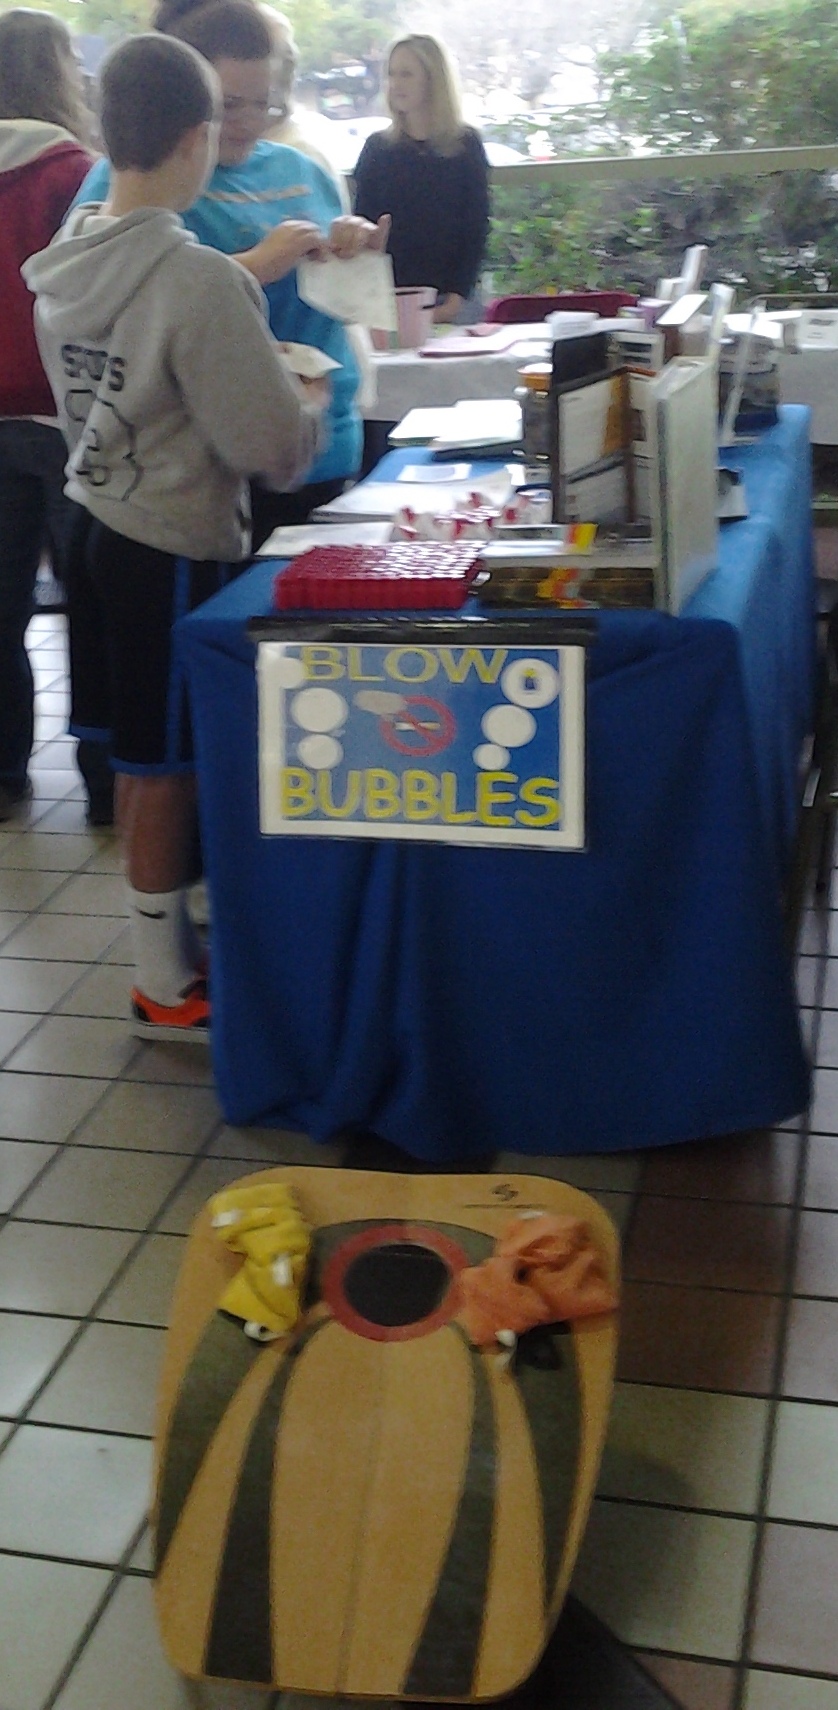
Yuba City's NDFW 2013 Event

Yuba City, CA. Yuba-Sutter Pathways & Substance Abuse Steering Coalition partnered up to offer a booth at the “Bless Your Heart Health Fair “in the Yuba-Sutter Mall.